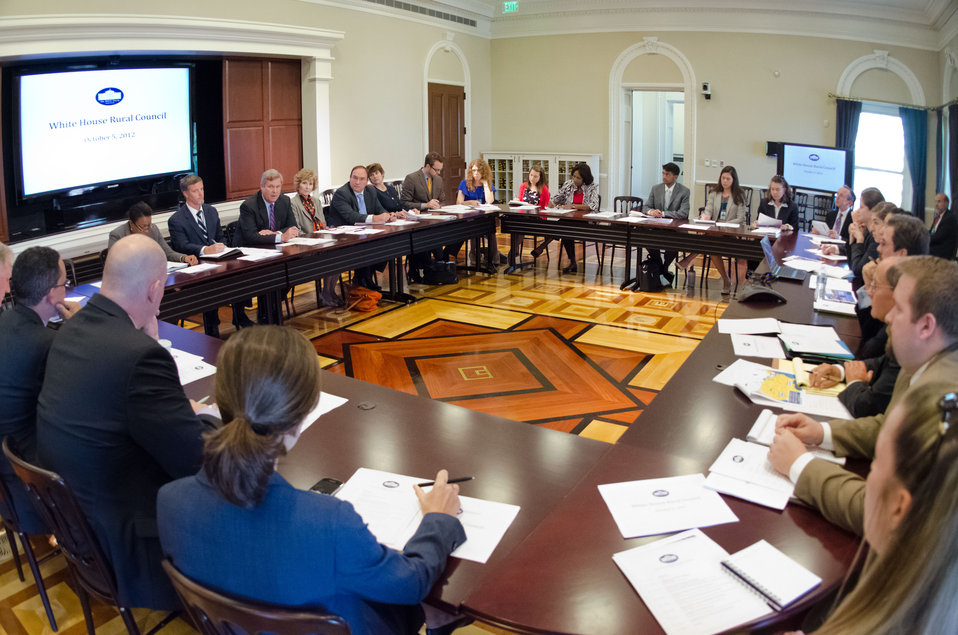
Agriculture Secretary Tom Vilsack chairs a meeting of the White House Rural Council at the White House in Washington, D.C. on Friday, Oct. 5, 2012. The White House Rural Council discusses recent White House announcements and Secretary Vilsack asked council members to outline their work plan for the coming months.